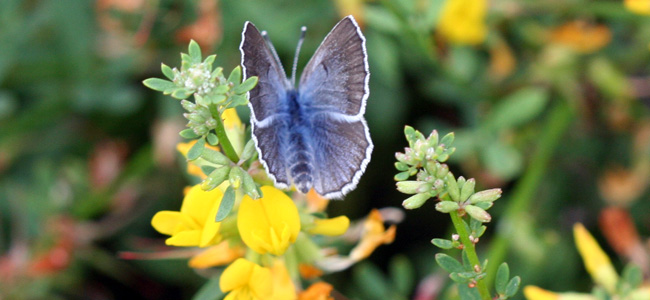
Palos Verde Blue Butterfly